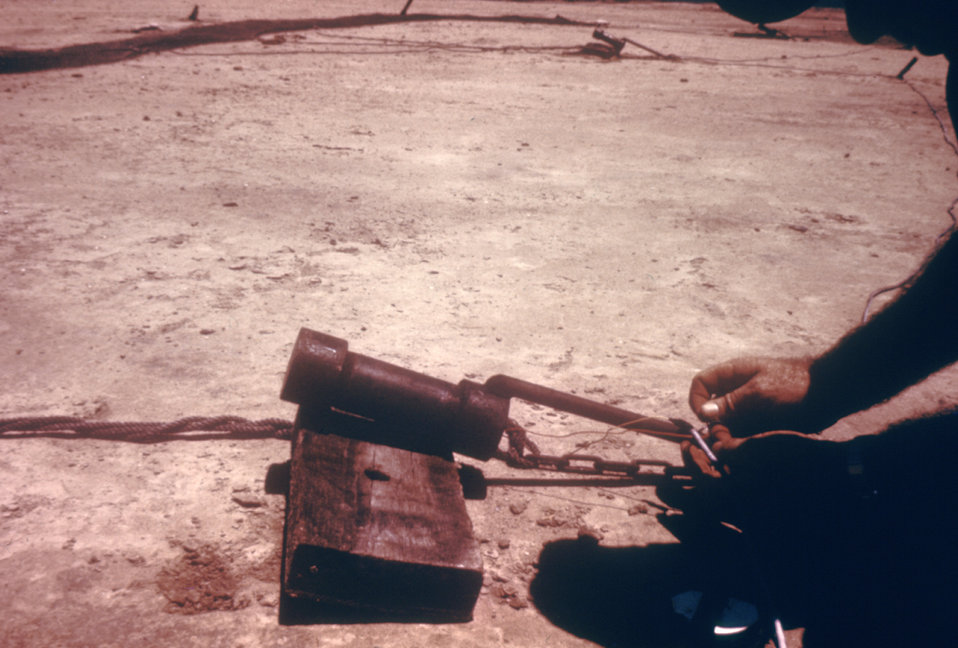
Cannons such as this are used when projecting nets during the capture of large birds when conducting arbovirus field studies.